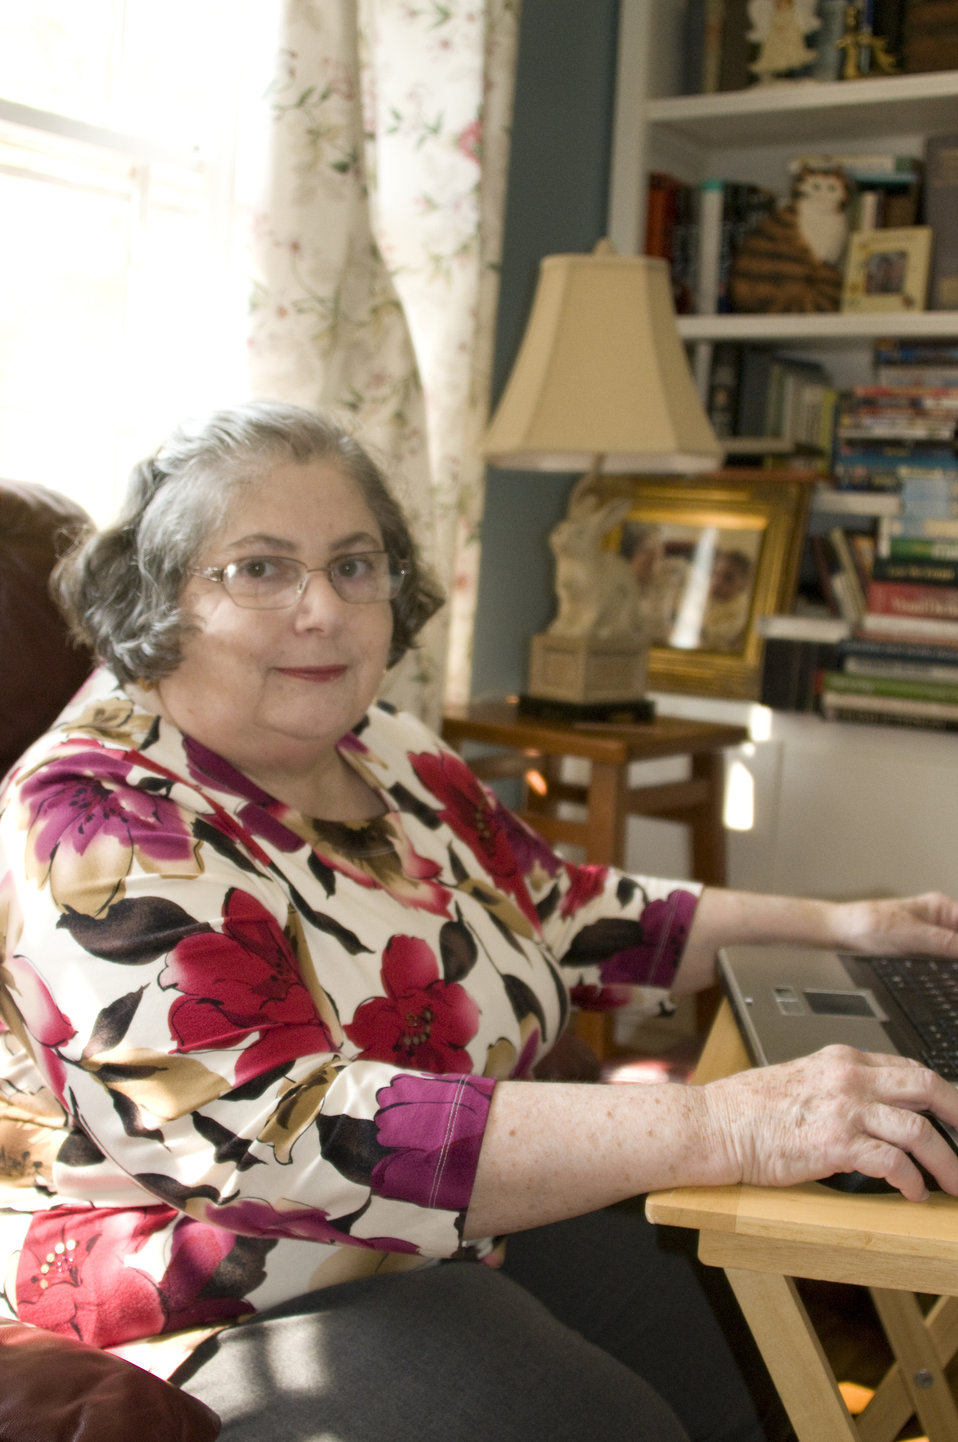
Seated at a small folding table, atop which was a laptop computer, this female rheumatoid arthritis patient was shown logging on to her workstation. With the aid of a sock-donning device, she had just dressed her feet in stockings and zipper-laced sneakers. Living with arthritis does not necessarily mean existing in a non-functional state.Treatment